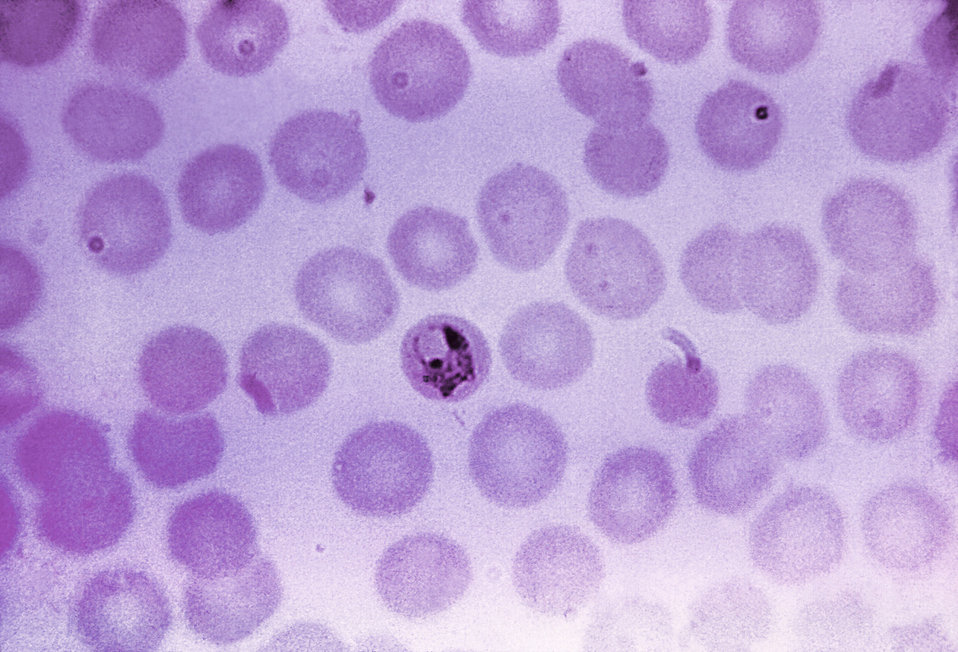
This thin film Giemsa stained micrograph depicts a 'basket-shaped', growing Plasmodium malariae trophozoite.